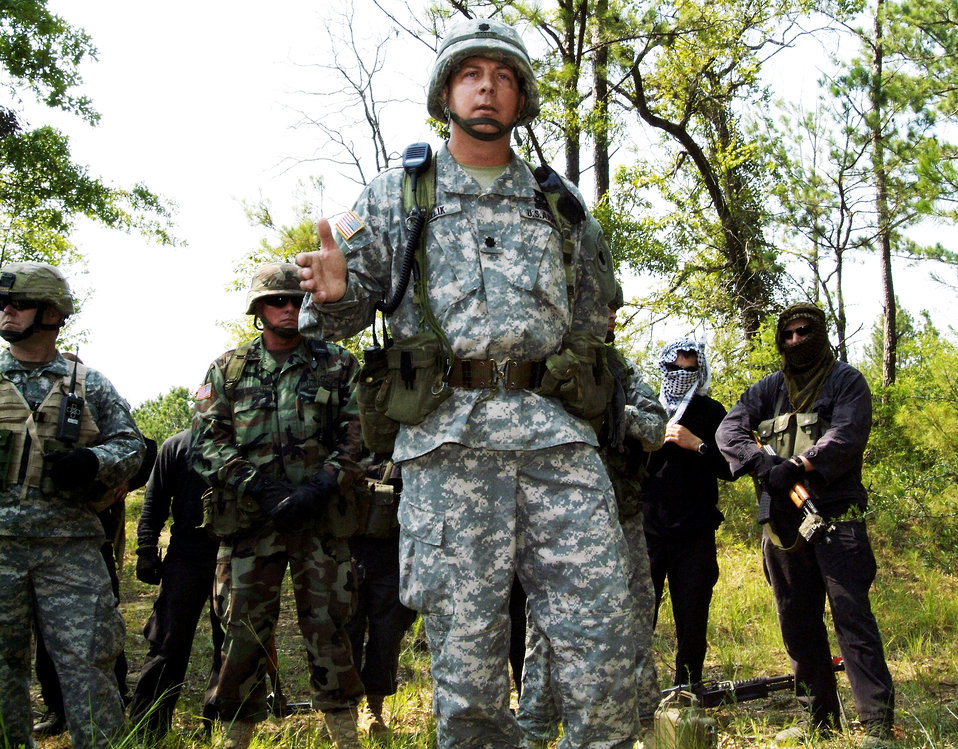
Airmen train to prepare for 'in-lieu-of' taskings

Army Lt. Col. Mike Kozlik briefs trainees on detecting improvised explosive devices during